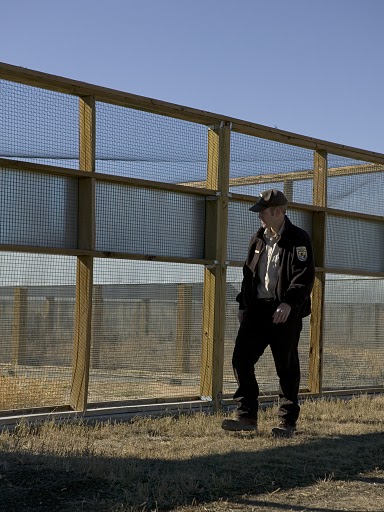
National Black-footed Ferret Conservation Center